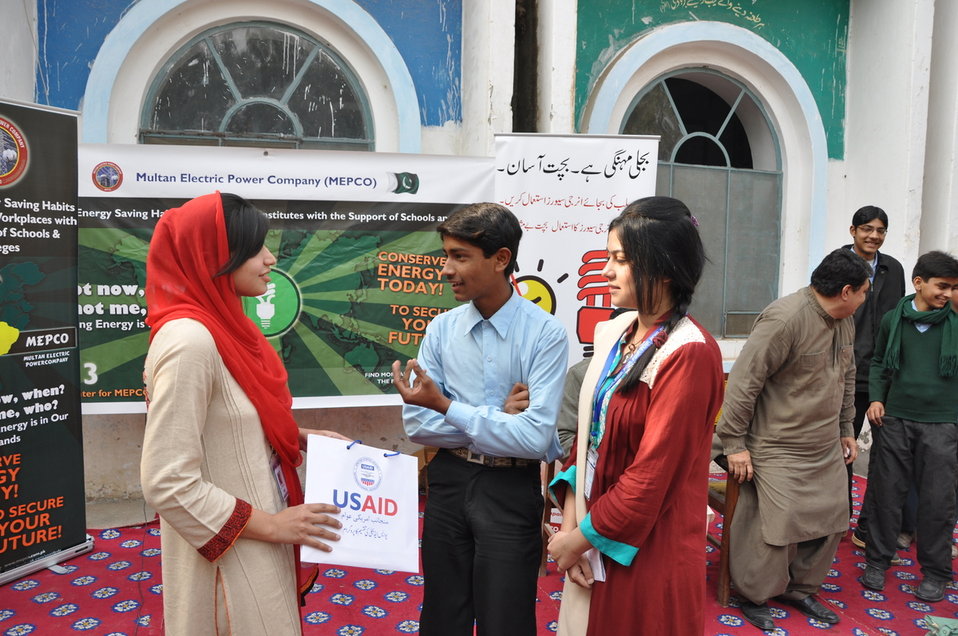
USAID Power Distribution Program-Energy Conservation Seminar at Govt. Bukhari Public School for Boys, Multan.

During the quiz session, a student explaining three best ways to conserve energy at school.